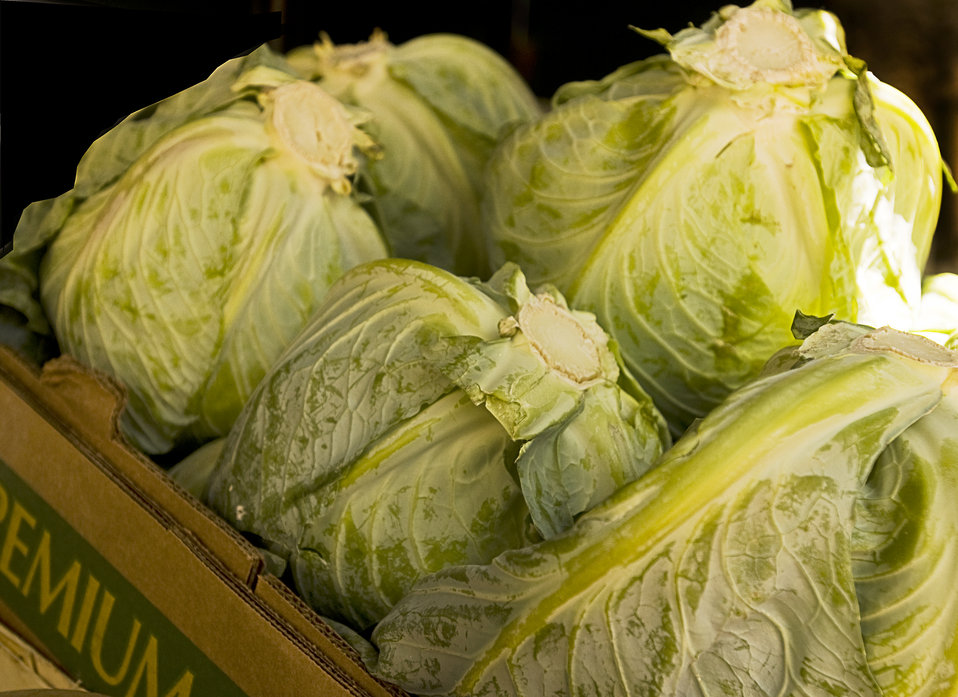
This image was captured in the produce section of a mobile Georgian farmers market, and depicts a close-up view of a shipping carton filled with heads of iceberg lettuce.